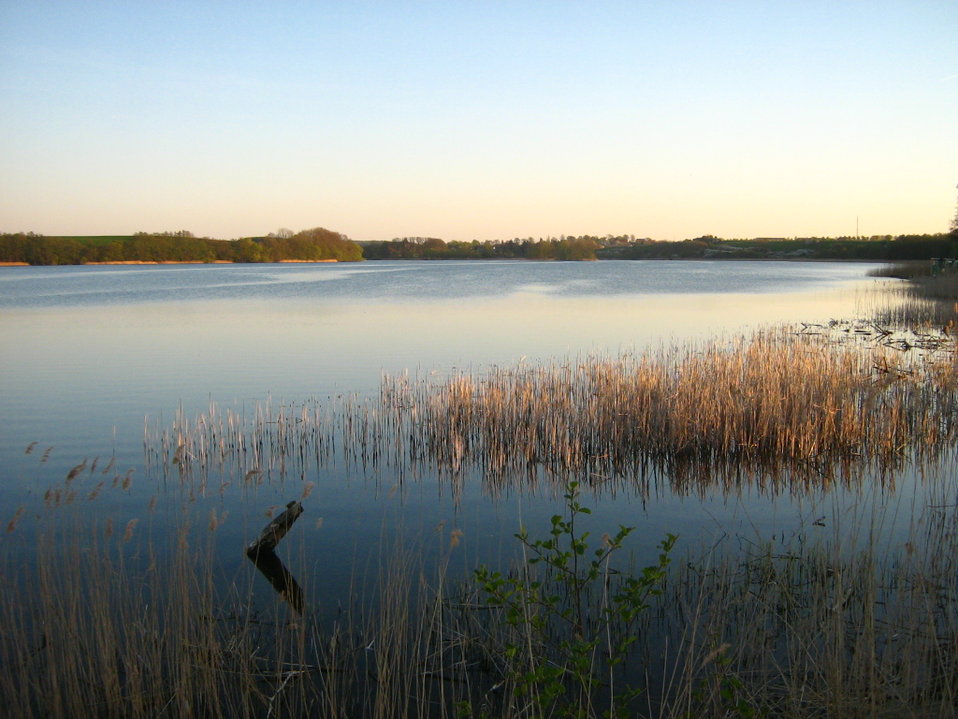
Deutsch: Der Cambser See bei Cambs im Landkreis Parchim (Mecklenburg).